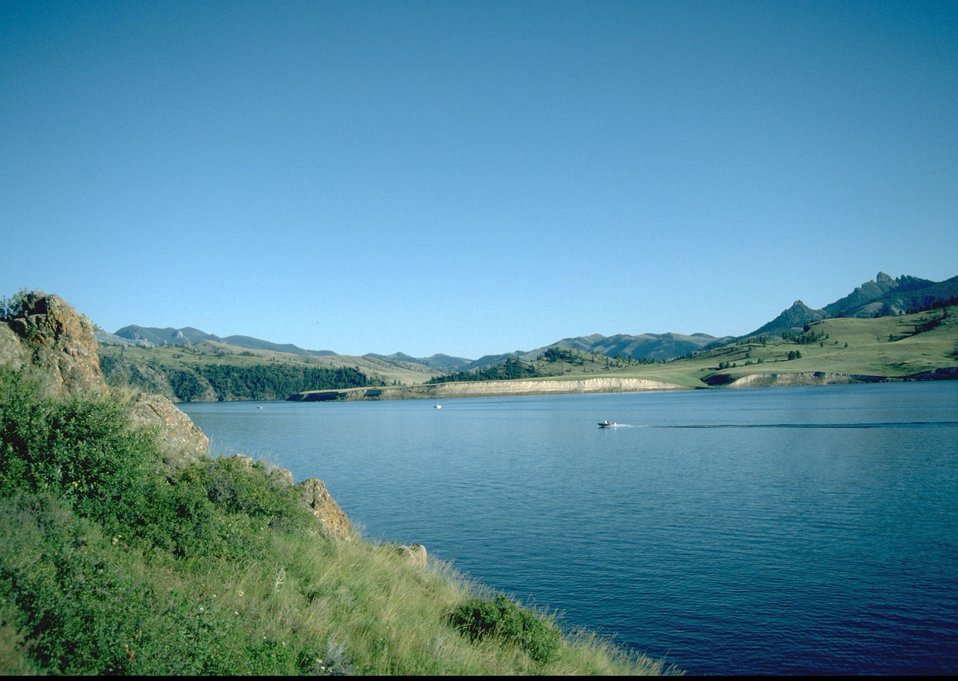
Holter Lake